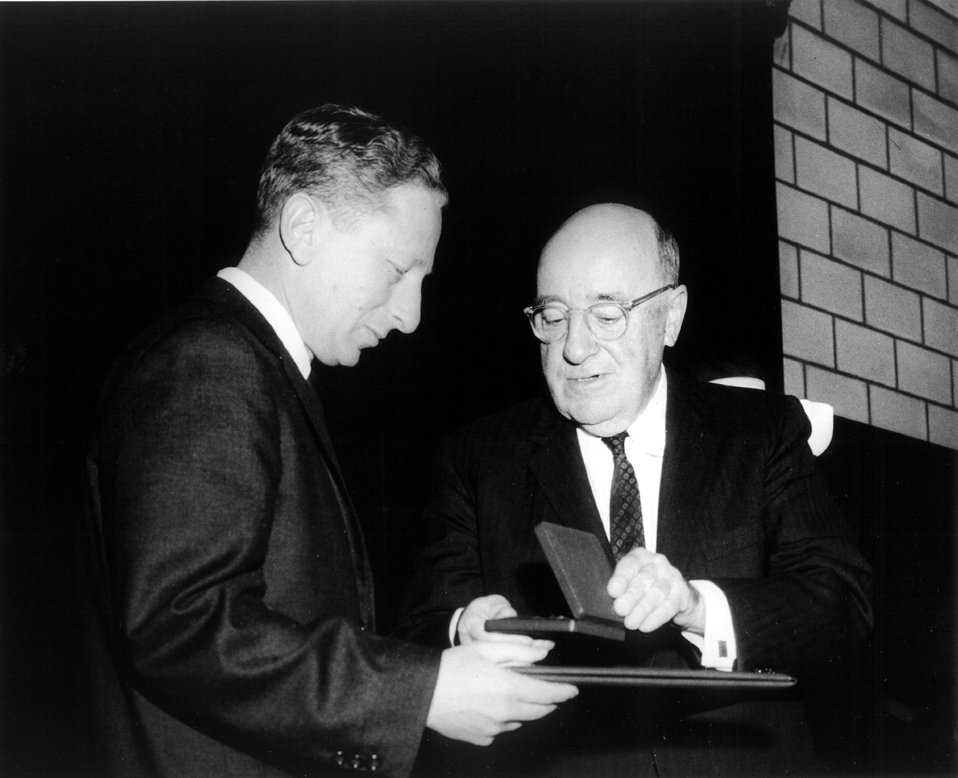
Dr. Wilson, Dr. Rosen. ERNEST O. LAWRENCE AWARD - 1963. National Academy of Sciences, April 25, 1963.